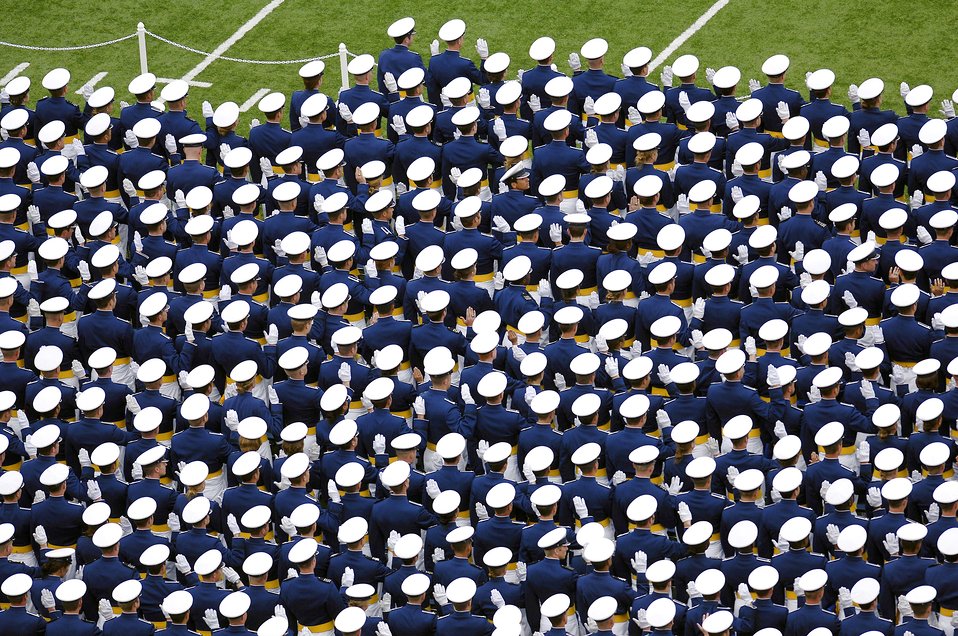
The 50th Academy class graduates

Newly graduated second lieutenants recite the Oath of Office, followed by the traditional hat toss during the U.S. Air Force Academy Class of 2008 graduation ceremony at Falcon Stadium May 28.